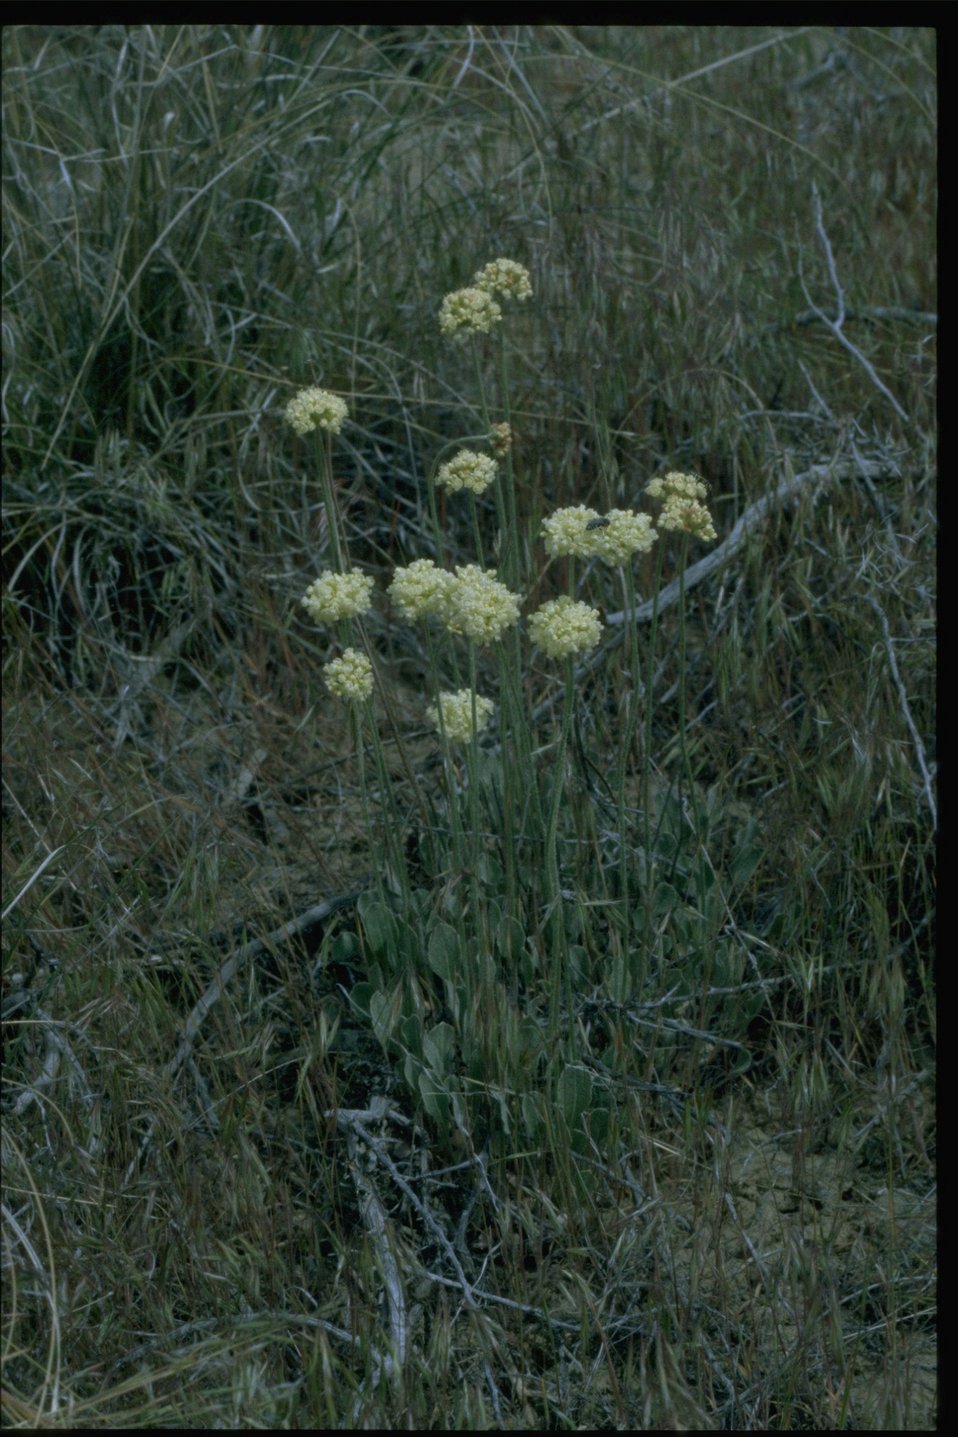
Farshot of Buckwheat habitat.